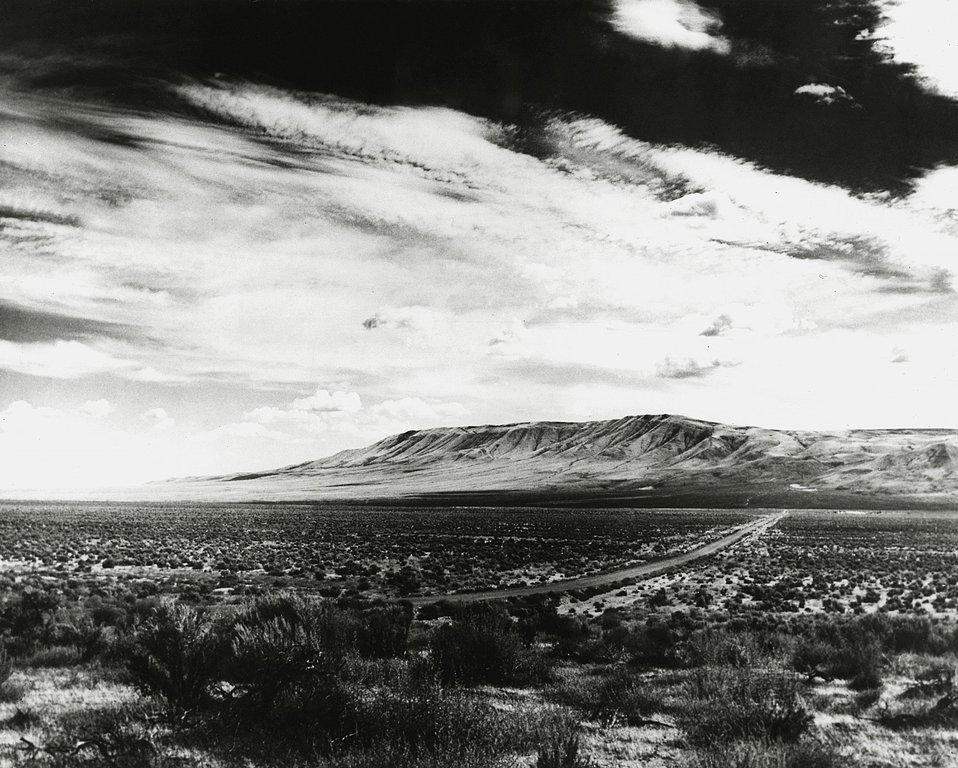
Project ALE (Arid Land Ecology) is an intensive, long-term study being conducted on the AEC's Hanford Works reservation near Richland, Washington. c. 1972